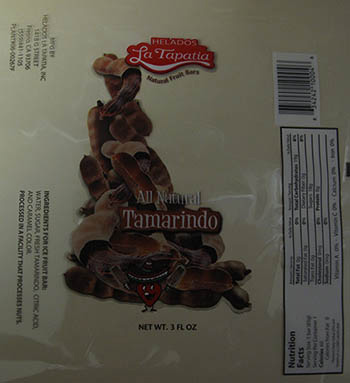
RECALLED – Ice cream products

March 19, 2014 – Product Recall – Helados La Tapatia, Inc. Recalls Products Because of Possible Health Risk.